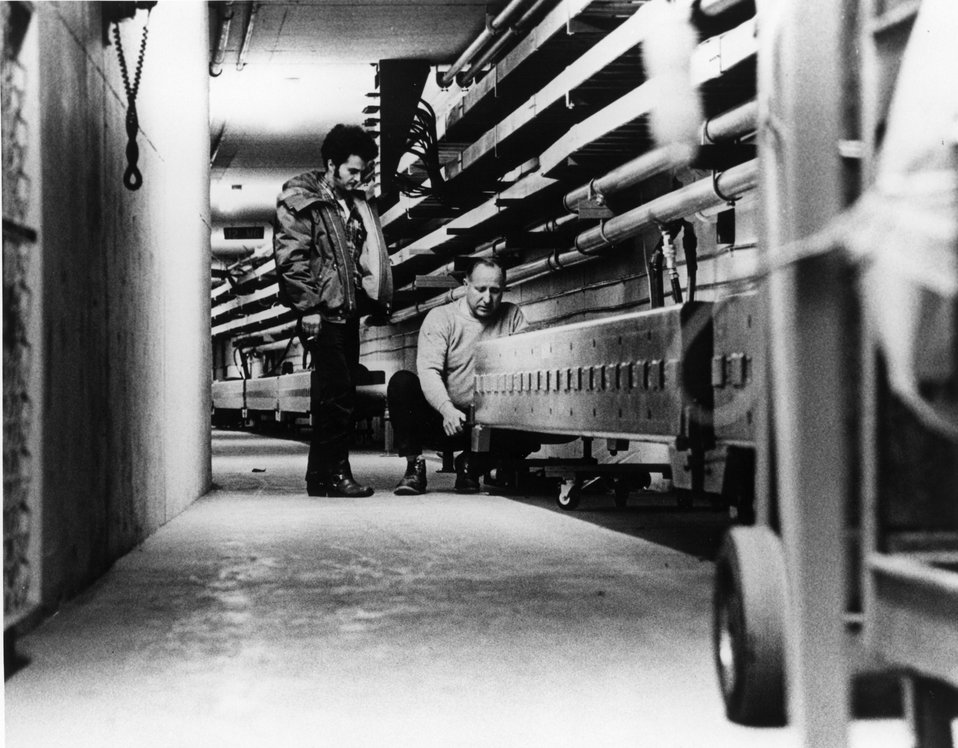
(caption illegible). c. 1974